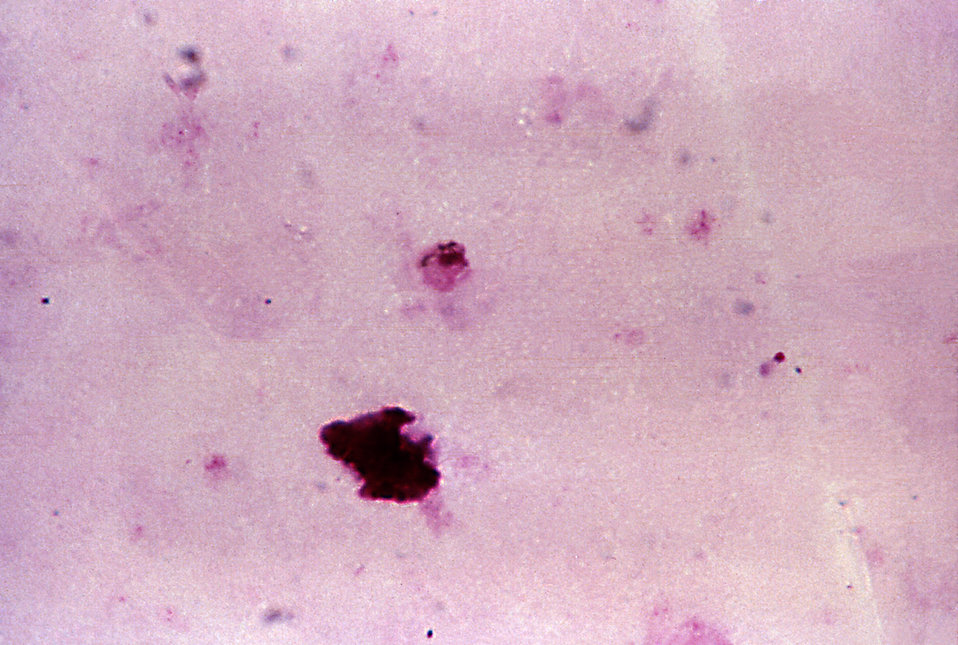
This thick film blood smear micrograph reveals a rounded P. falciparum gametocyte in the center of this slide.